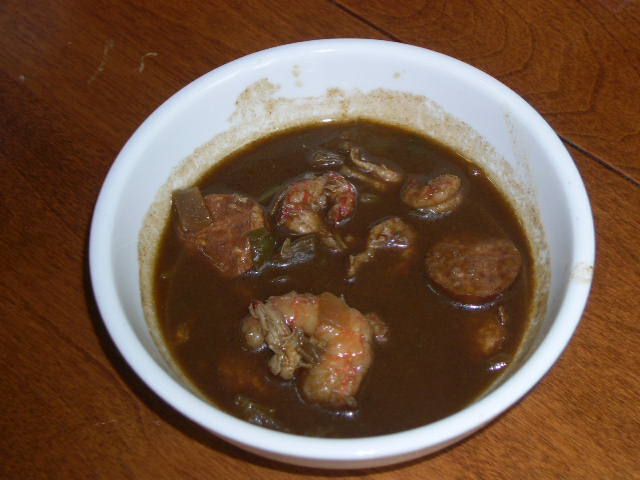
photo for a recipe on Wikibooks Photo of Cajun seafood gumbo